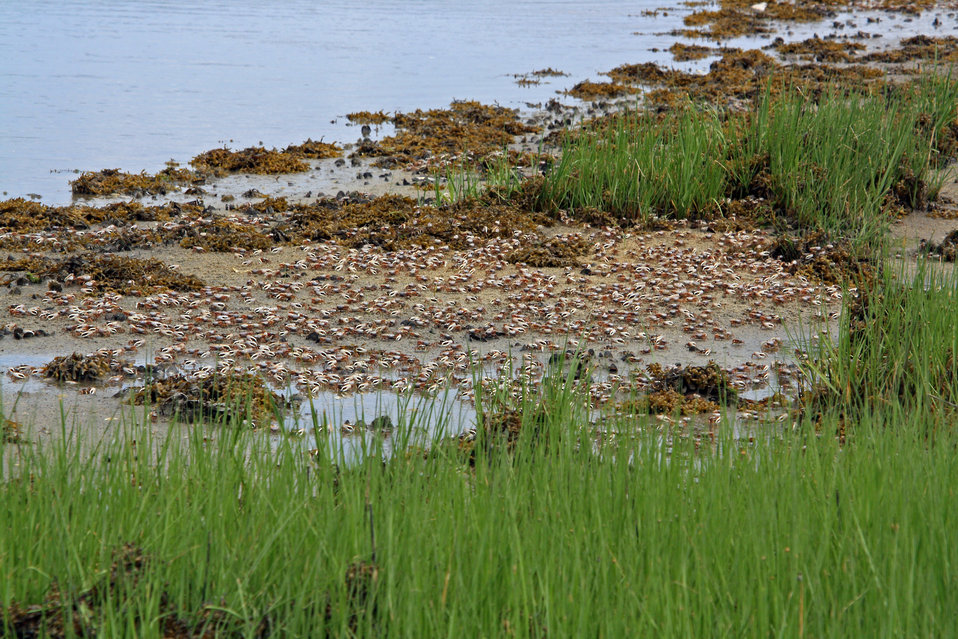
Fiddler crabs

Elizabeth A. Morton National Wildlife Refuge, NY.